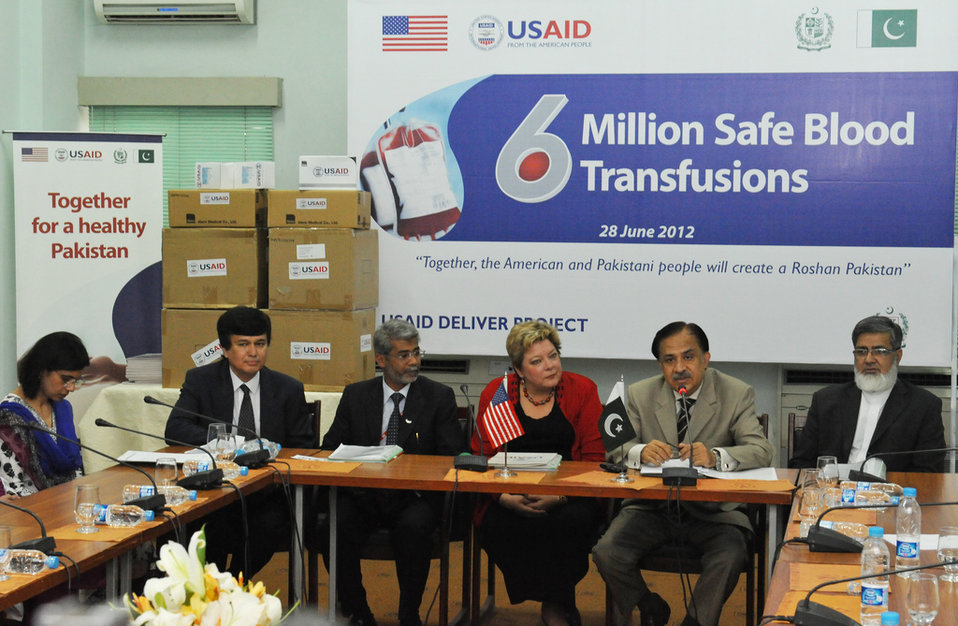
U.S. strengthens Pakistan’s ability to deliver quality health care

The U.S. Government has donated a two-year supply of blood safety kits to the Government of Pakistan to support Pakistan’s National Blood Transfusion Program. The 115,000 kits were presented by Ms. Karen Freeman, Acting Country Director for the U.S. Agency for International Development (USAID) to Mr. Imtiaz Inayat Ilhahi, Secretary of Capital Administration and Development Pakistan, today at the Pakistan Institute for Medical Sciences (PIMS).